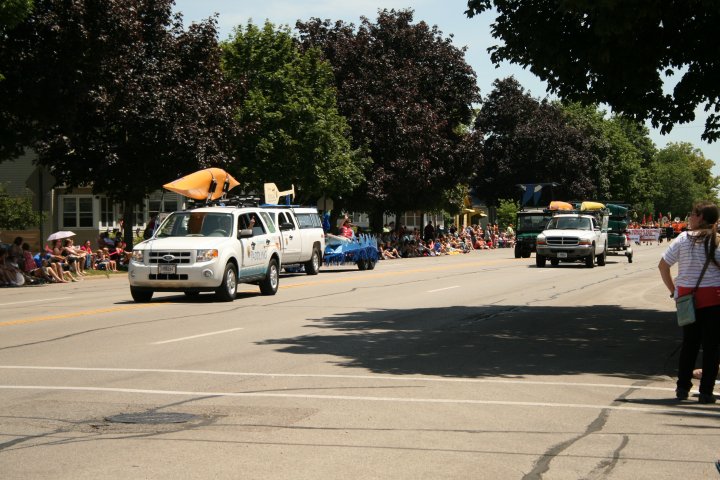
Full lineup

UMR Winona staff participated in the 65th Annual Steamboat Days Parade in Winona, MN by promoting The Summer of Paddling.